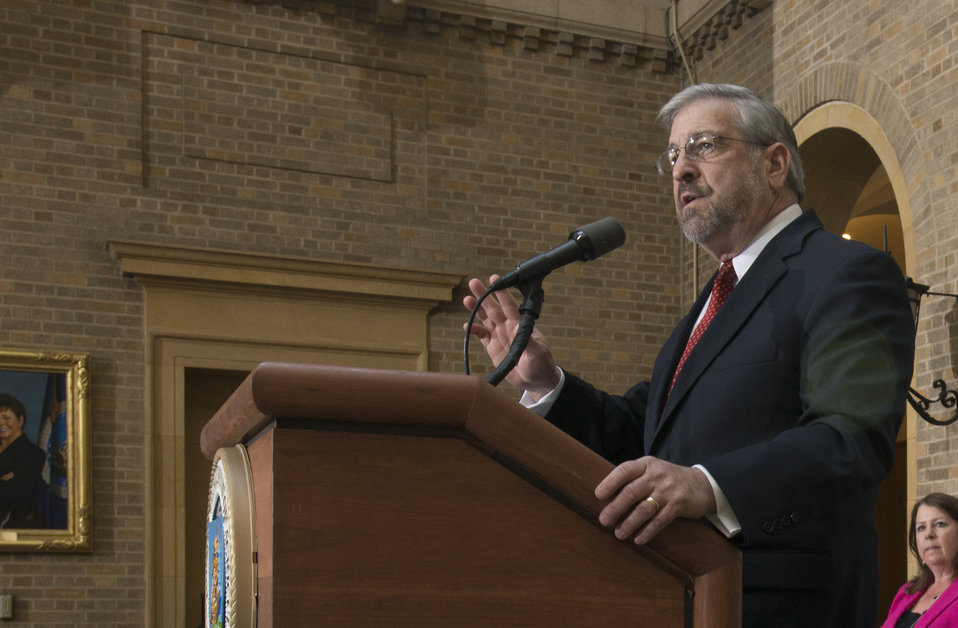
CEO of Ducks Unlimited Dale Hall speaks at the Ducks Unlimited/USA Rice Federation event at the U.S. Department of Agriculture (USDA) in Washington, D.C. on Tuesday, May 6, 2014.